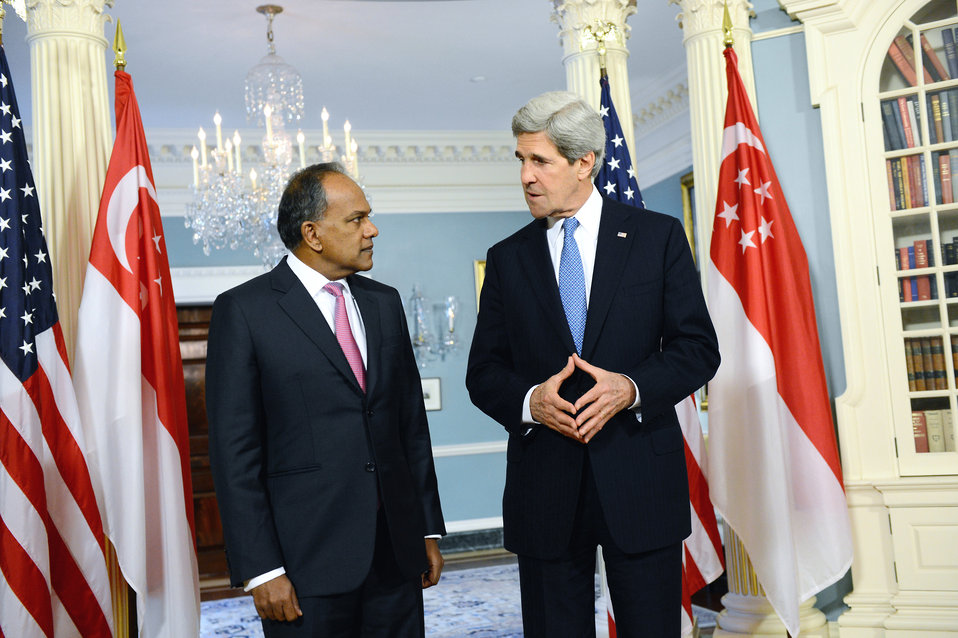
Secretary Kerry Meets With Singaporean Foreign Minister K. Shanmugam

U.S. Secretary of State John Kerry meets with Singaporean Foreign Minister K. Shanmugam at the U.S. Department of State in Washington, D.C., on March 13, 2013.